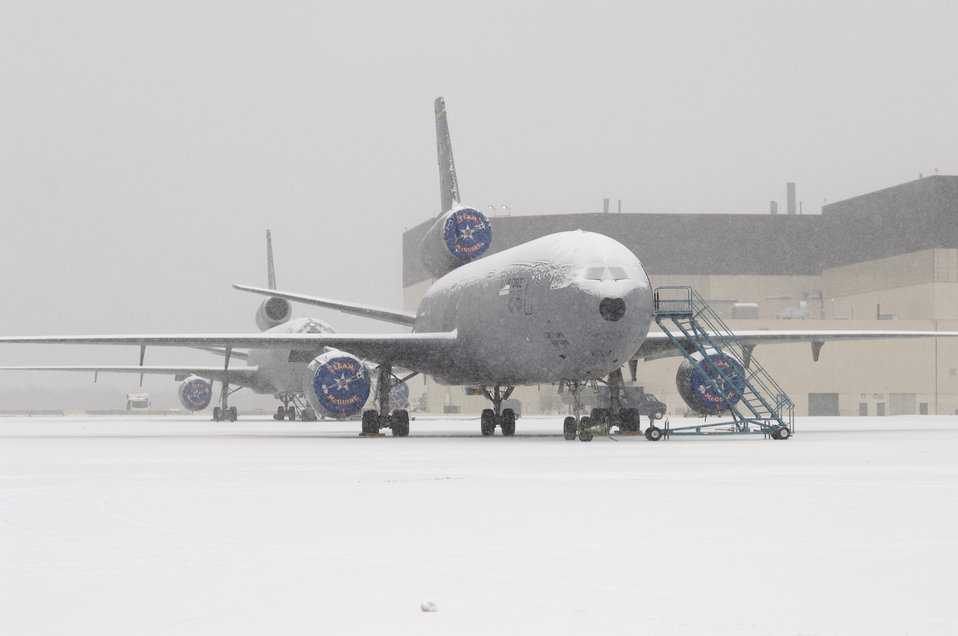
De-ice is nice

A row of KC-10A Extenders sit on the flight line March 7 at McGuire Air Force Base, N.J. awaiting to be deiced during a snowstorm that hit the base.